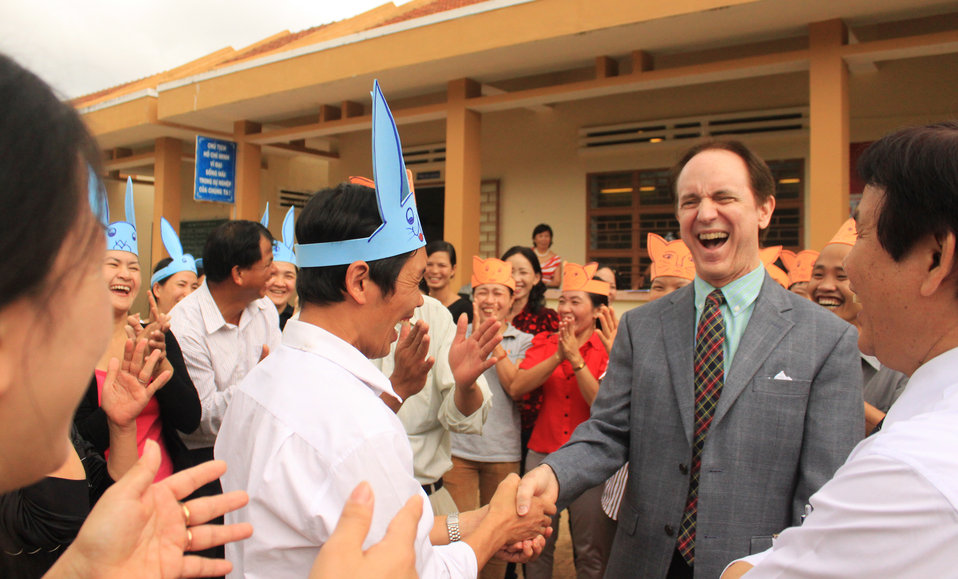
USAID Mission Director Francis Donovan joins local teachers as they practice what they learned from USAID-funded intensive training courses